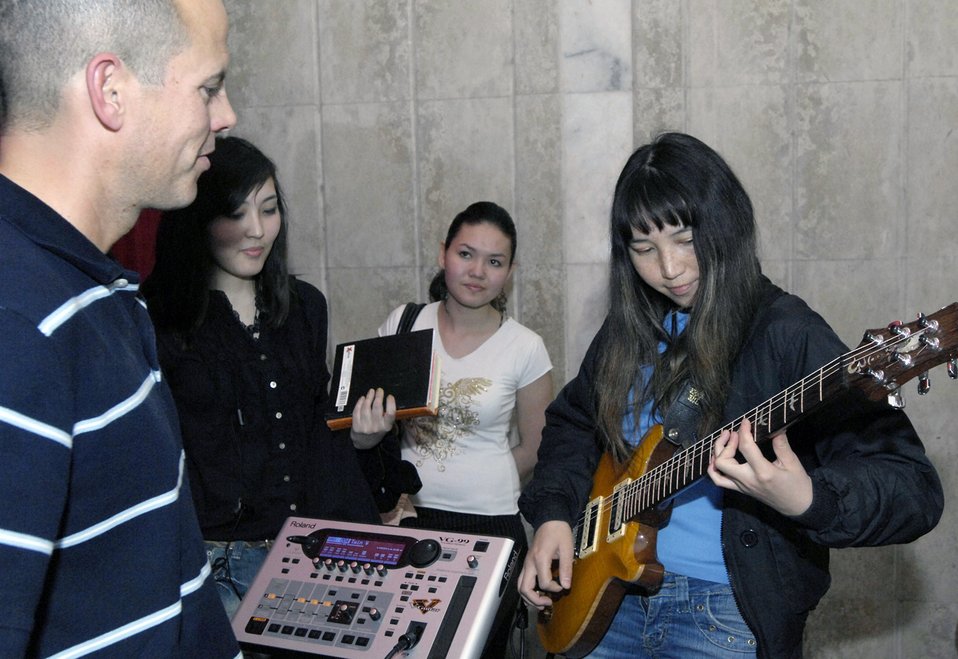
Band members connect with Kyrgyzstan music students

Tech. Sgt. Jerry Kelley shares his guitar with Gulia Aidaralieva March 26 at the Bishkek College of Music in Kyrgyzstan. The Air Force pop band performed at the Bishkek College of Music as well other locations off-base during their six-day trip to Kyrgyzstan. Sergeant Kelley is a guitar player with the U.S. Air Forces Central Band Hot Brass. Miss Aidaralieva is a student of the Bishkek College of Music in Kyrgyzstan.